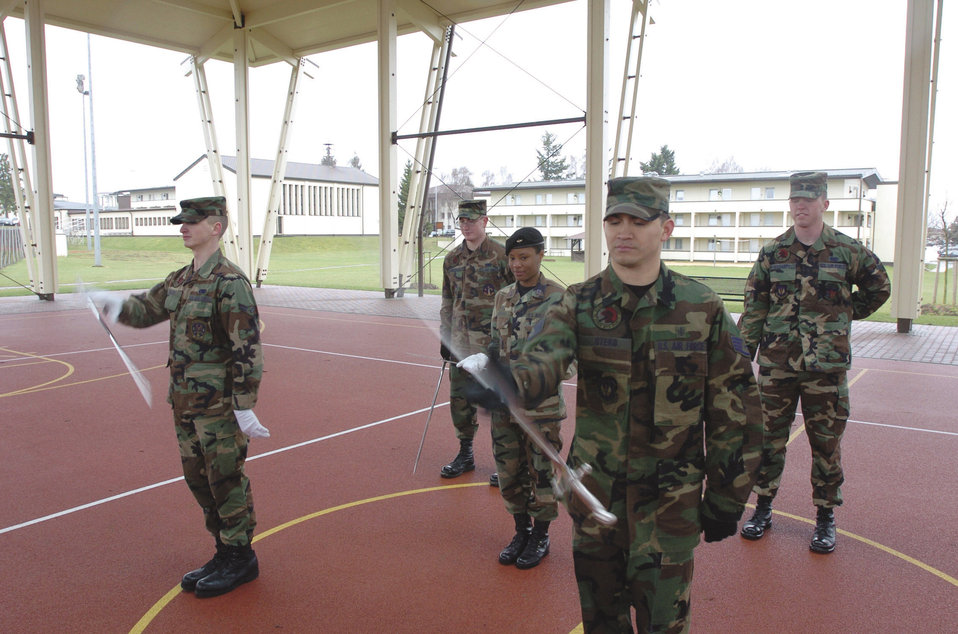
Spangdahlem saber team

Staff Sgt. Ernesto Otero prepares to catch a spinning saber while Senior Airman Josh Vanderbeck, Airman 1st Class Jacob McCarty and Cadet 1st Class Rhoshonda McGruder practice their drill routine at Spangdahlem Air Base, Germany Wednesday, March 29, 2006. Sergeant Otero and Airmen Vanderbeck and McCarty are members of the base honor guard saber drill team. Cadet McGruder is with the U.S. Air Force Academy Saber Drill Team.